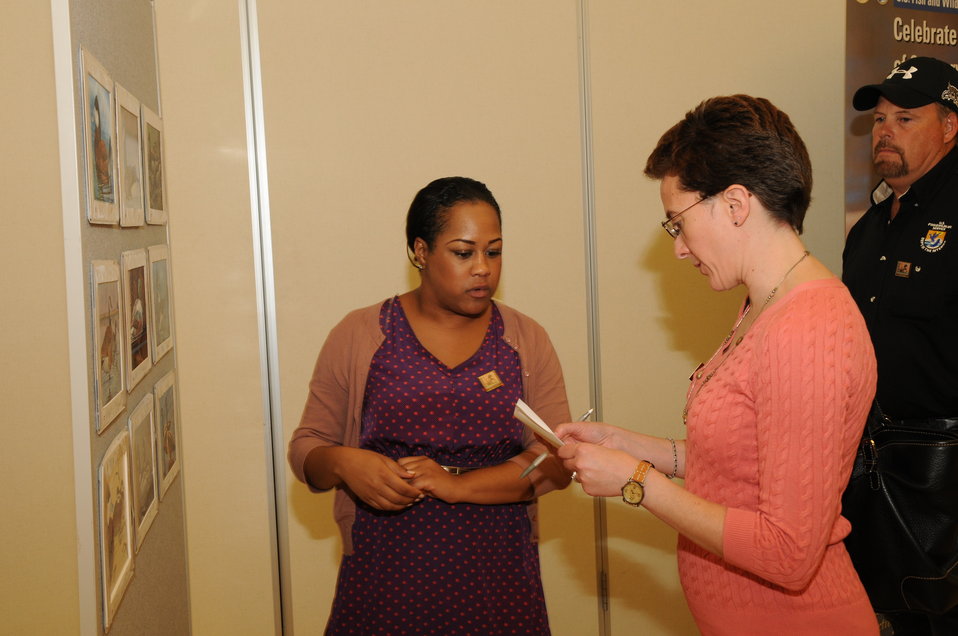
Artwork Viewing

The U.S. Fish & Wildlife Service sponsored the 2012 Federal Duck Stamp Art Contest September 28 and 29 in Ogden, Utah, at Weber State University. A panel of five judges was responsible for choosing the art work used to design the 2013-2014 Migratory Bird Hunting and Conservation Stamp.